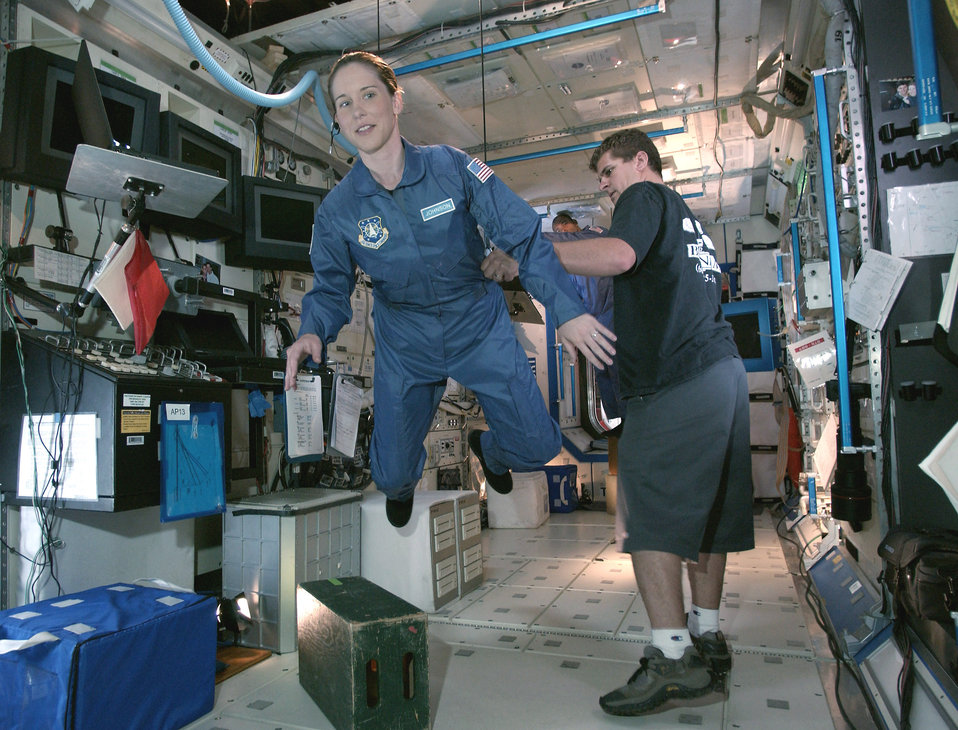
Filming begins on new Air Force commercials

HOLLYWOOD, Calif. -- Capt. Morgan Johnson learns to float using a cable during filming of new Air Force commercials at Universal Studios here May 19. Four ads being filmed over two weeks in several locations throughout California will air in the fall. Captain Johnson is a program manager for military satellite communication ground-control systems at Los Angeles Air Force Base, Calif.